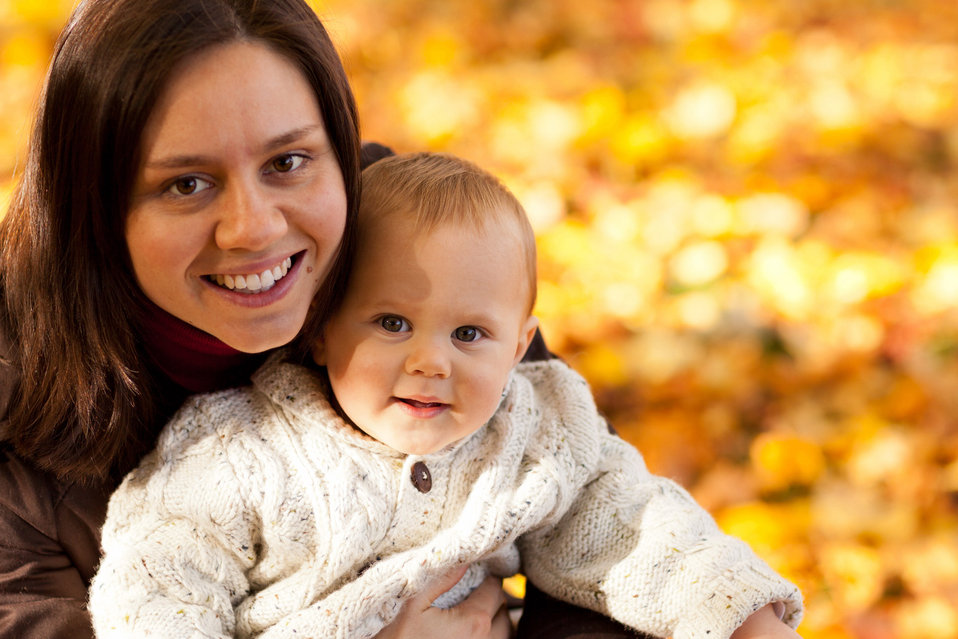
Mom and child in autumn

Mom and child in park in autumn.